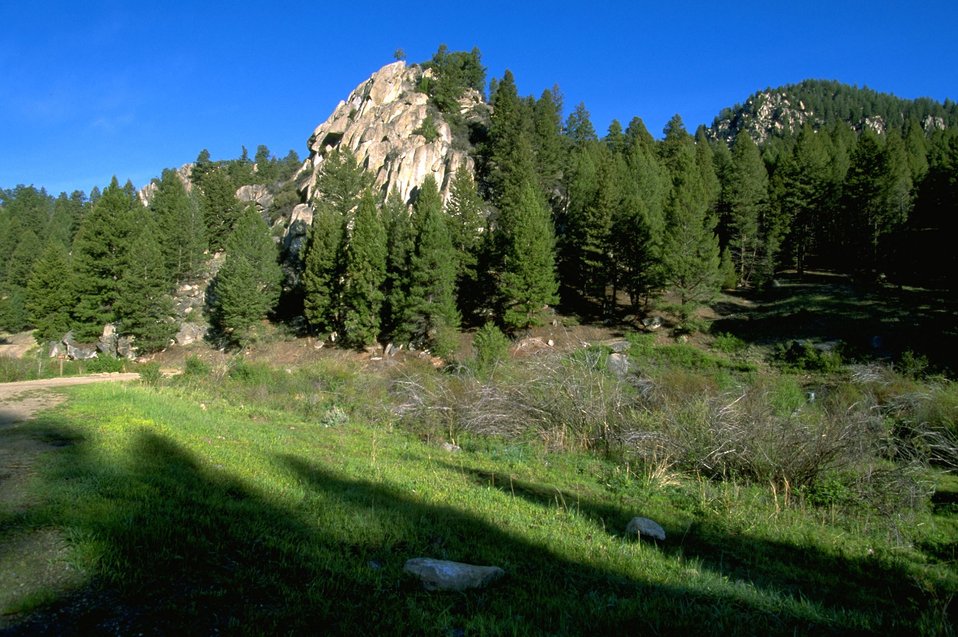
Rock formation surrounded by trees